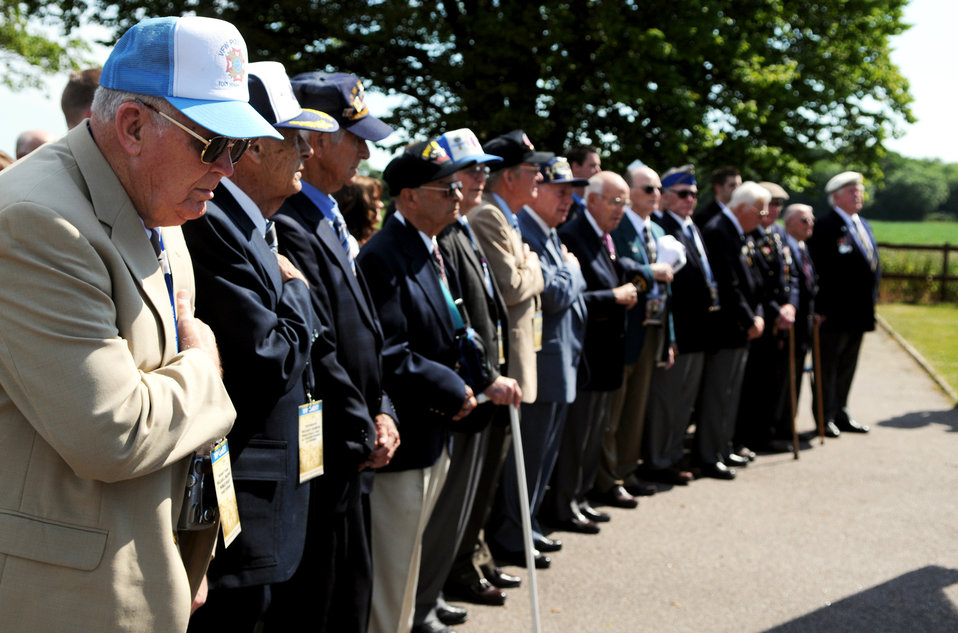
World War II vets visit former home

American and British World War II veterans on a tour of significant sites in the European theater render honors during the singing of the